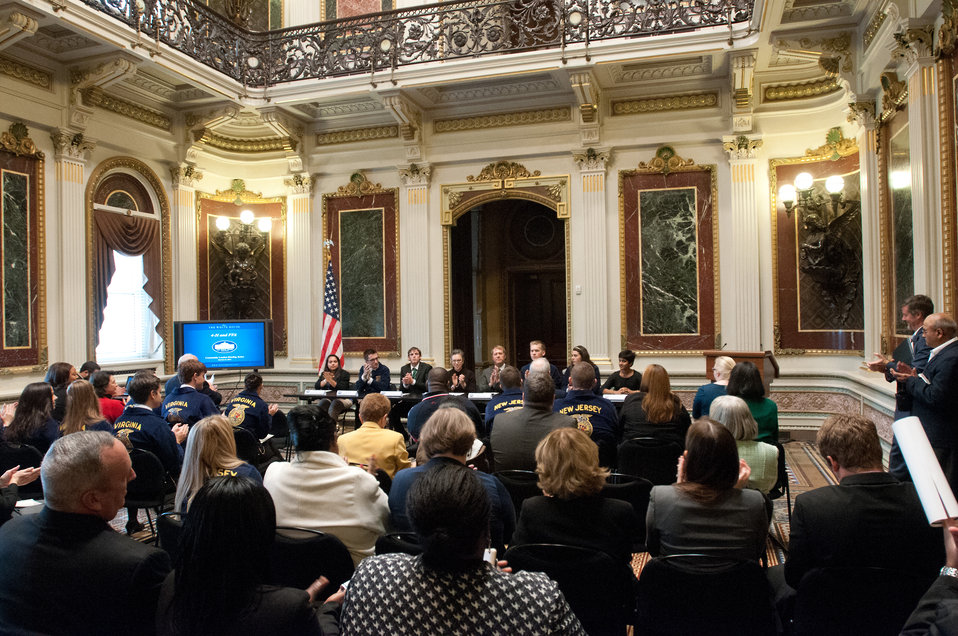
The Youth Champions of Change Panel of FFA and F-H members completes their presentations to a round of applause at the Champions of Change Recognition event in the Indian Treaty Room of the Executive Office Building in Washington, D.C. on Tuesday, Oct. 9, 2012. The Champions of Change program was created to honor ordinary Americans doing great work in their communities. Each week, a different sector is highlighted and groups of Champions, ranging from educators, entrepreneurs and community leaders, are recognized for the work they are doing to serve and strengthen their communities. The Indian Treaty Room, originally the Navy's library and reception room, has rich marble wall panels, tiled floors, 800-pound bronze sconces, and gold leaf ornamentation.